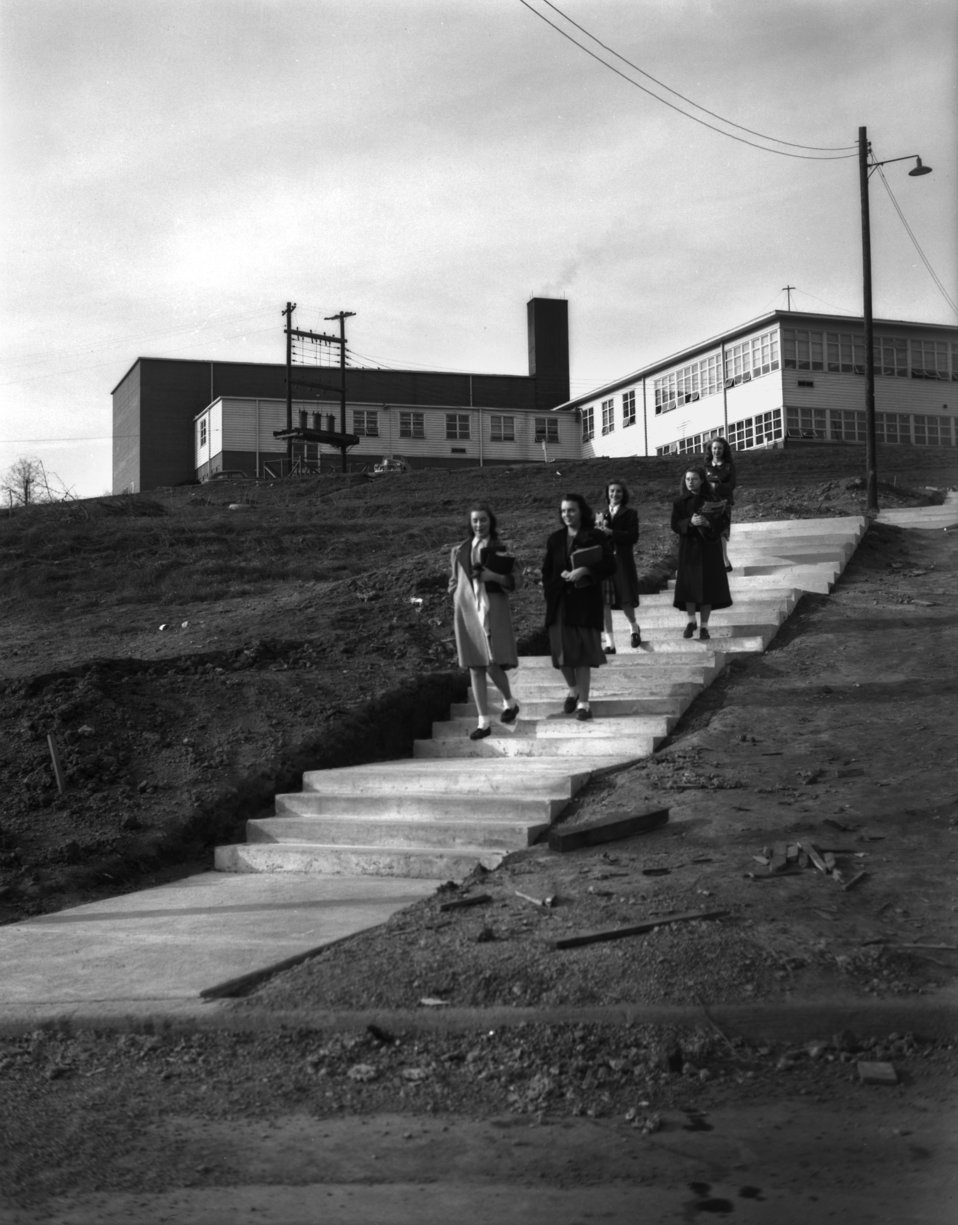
High School New Steps

00421 DOE photo by Ed Westcott
Oak Ridge Tennessee 1-9-1948